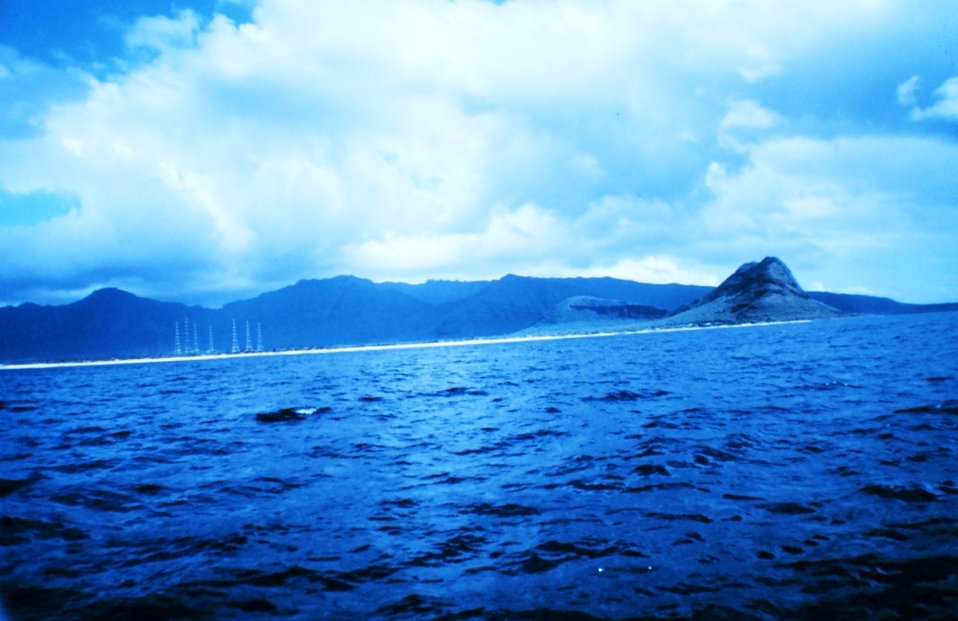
Waianae coast -southwest Oahu